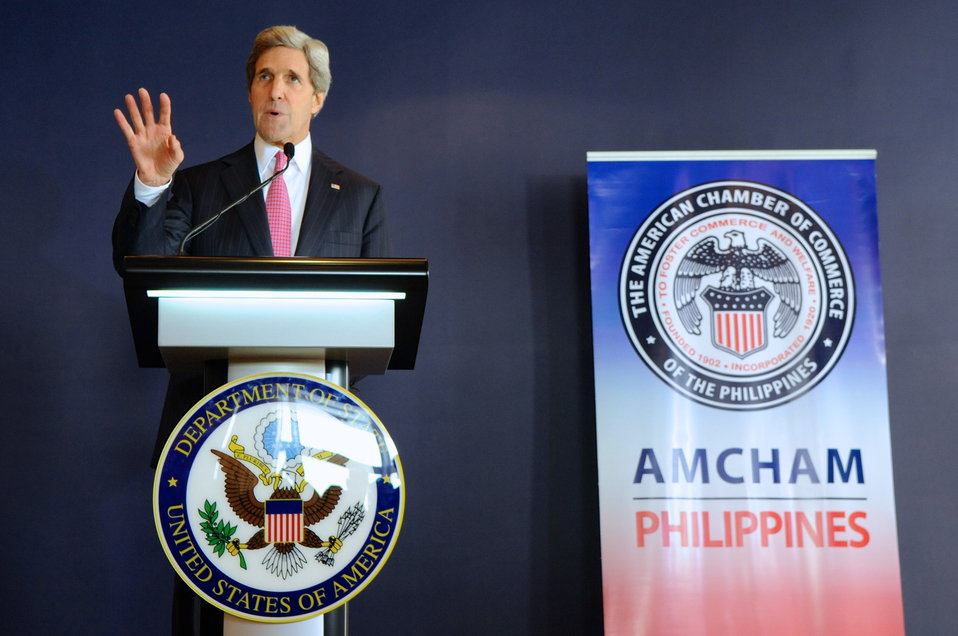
Secretary Kerry Addresses the American Chamber of Commerce Members in Manila

U.S. Secretary of State John Kerry addresses the American Chamber of Commerce in Manila, Philippines, on December 17, 2013.